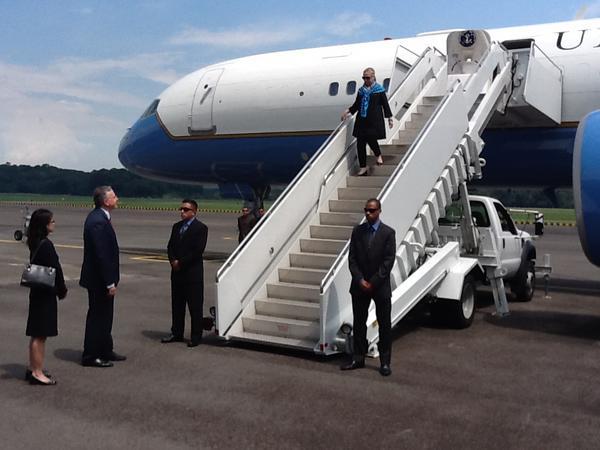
Secretary Clinton Arrives in Singapore

U.S. Secretary of State Hillary Rodham Clinton arrives in Singapore, November 17, 2012.